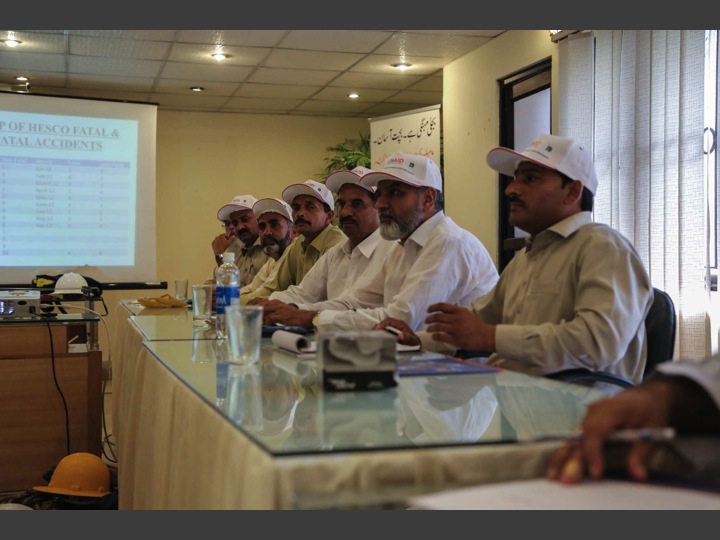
Linemen Training Session